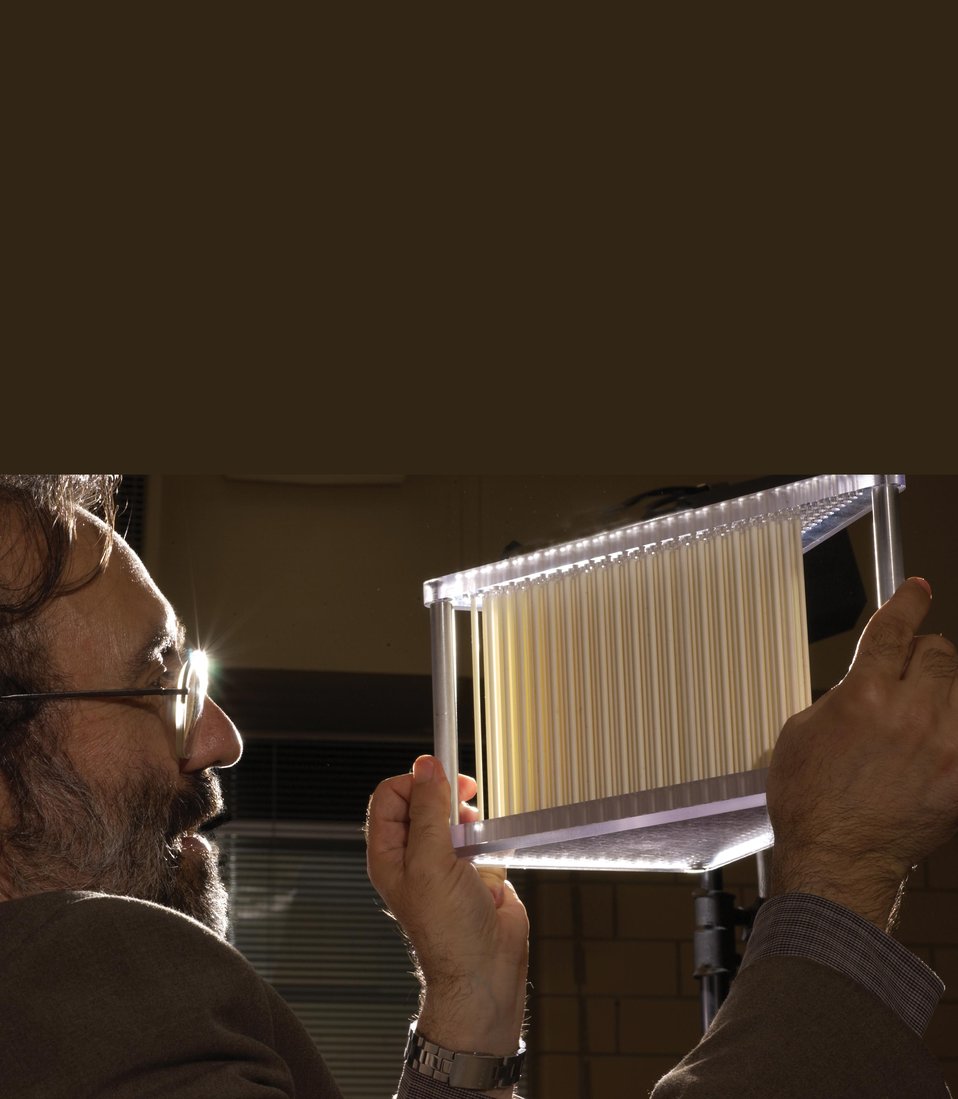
AMES PHYSICIST EXAMINES A PHOTONIC CRYSTAL.

PHOTONIC CRYSTALS WERE CONSTRUCTED BY AMES PHYSICISTS IN ORDER TO DEMONSTRATE NEGATIVE REFRACTION AND SUPERLENSING IN THE MICROWAVE REGION OF THE ELECTROMAGNETIC SPECTRUM. SCIENTISTS BELIEVE THAT EXPERIMENTS WITH THESE MATERIALS MAY LEAD TO THE DEVELOPMENT OF A TYPE OF FLAT SUPERLENS THAT OPERATES IN THE VISIBLE SPECTRUM, WHICH WOULD OFFER SUPERIOR RESOLUTION CAPTURING DETAIL MUCH SMALLER WHICH WOULD VASTLY IMPROVE IMAGING FOR BIOMEDICAL AND MATERIALS APPLICATIONS.